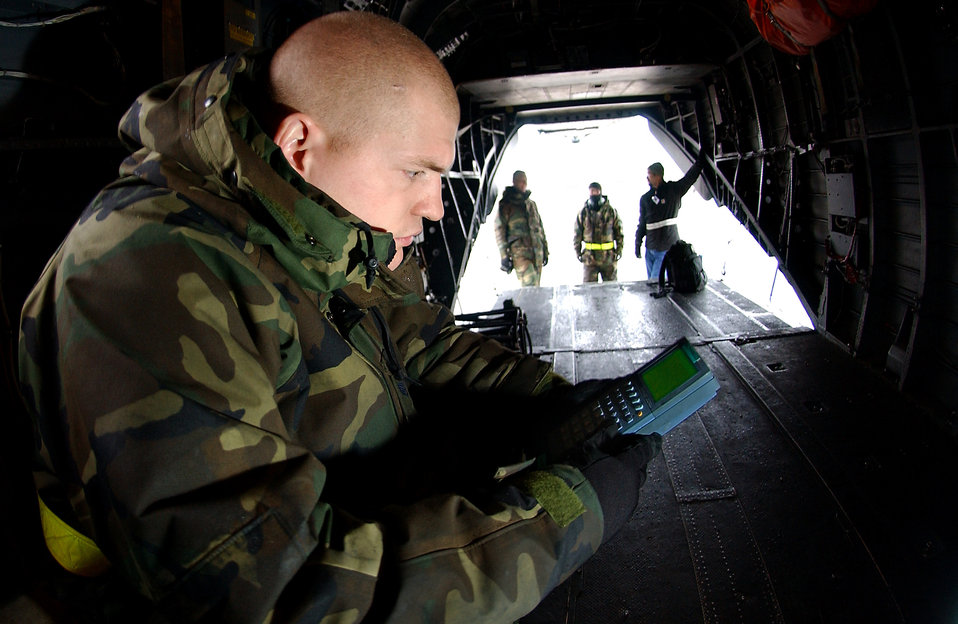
Good vibrations

ROYAL AIR FORCE MILDENHALL, England -- Staff Sgt. Alan Harris checks vibration levels on the main rotor blades of a MH-53M Pave Low IV helicopter here recently. Sergeant Harris is a crew chief assigned to the 352nd Maintenance Squadron.